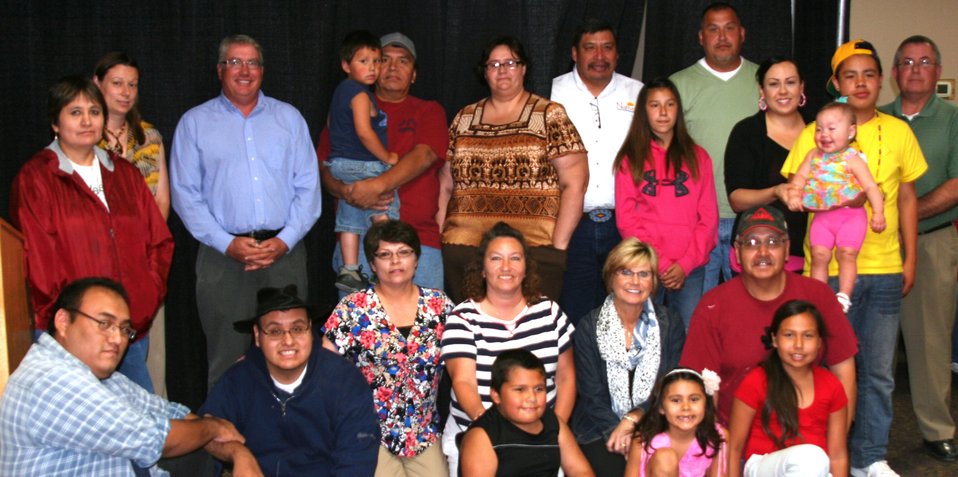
homeownerfamilies

Five of these families will have homes in the subdivision of Long Hollow on the Sisseton-Wahpeton Oyate Tribe’s Lake Traverse Reservation and one family will have a home in Watertown, SD on June 21, 2012, thanks to the partnership with the U.S. Department of Agriculture’s (USDA) Rural Development (RD) and Sisseton-Wahpeton Oyate Tribe. (Standing L to R Homeowner Sonya Lawrence, Rural Development Area Specialist Roxanne Woodring, Rural Development Area Director Bruce Jones, homeowners Lincoln and Devola Bird and family, Native Homes (Contractor) JC Crawford, homeowners Dustin LaFromboise and family, homeowners Jasmin Zetina and family, and Homes Are Possible, Inc. Executive Director Jeff Mitchell) (Kneeling L to R homeowner Sonya Lawrence (2 children kneeling at left), SWO Homeowner Program Angie Johnson, homeowner Christina Eberhart, Rural Development Area Specialist Janell Telin, and homeowners Robert LaCroix and family)